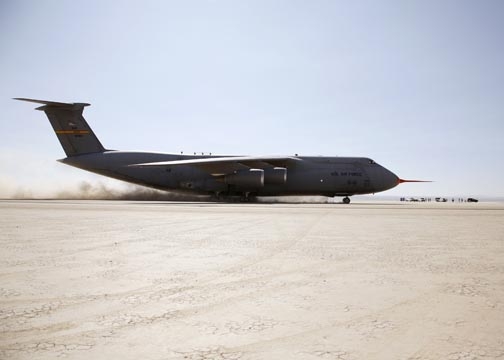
C-5 Galaxy undergoes dynamic runway testing

A C-5 Galaxy taxis across a series of ramps on Rogers Dry Lakebed, Calif., on Aug. 2 as part of the C-5's Reliability Enhancement and Re-engining Program. The dynamic tests are designed to evaluate the structural modes of the aircraft with newer jet engines installed.